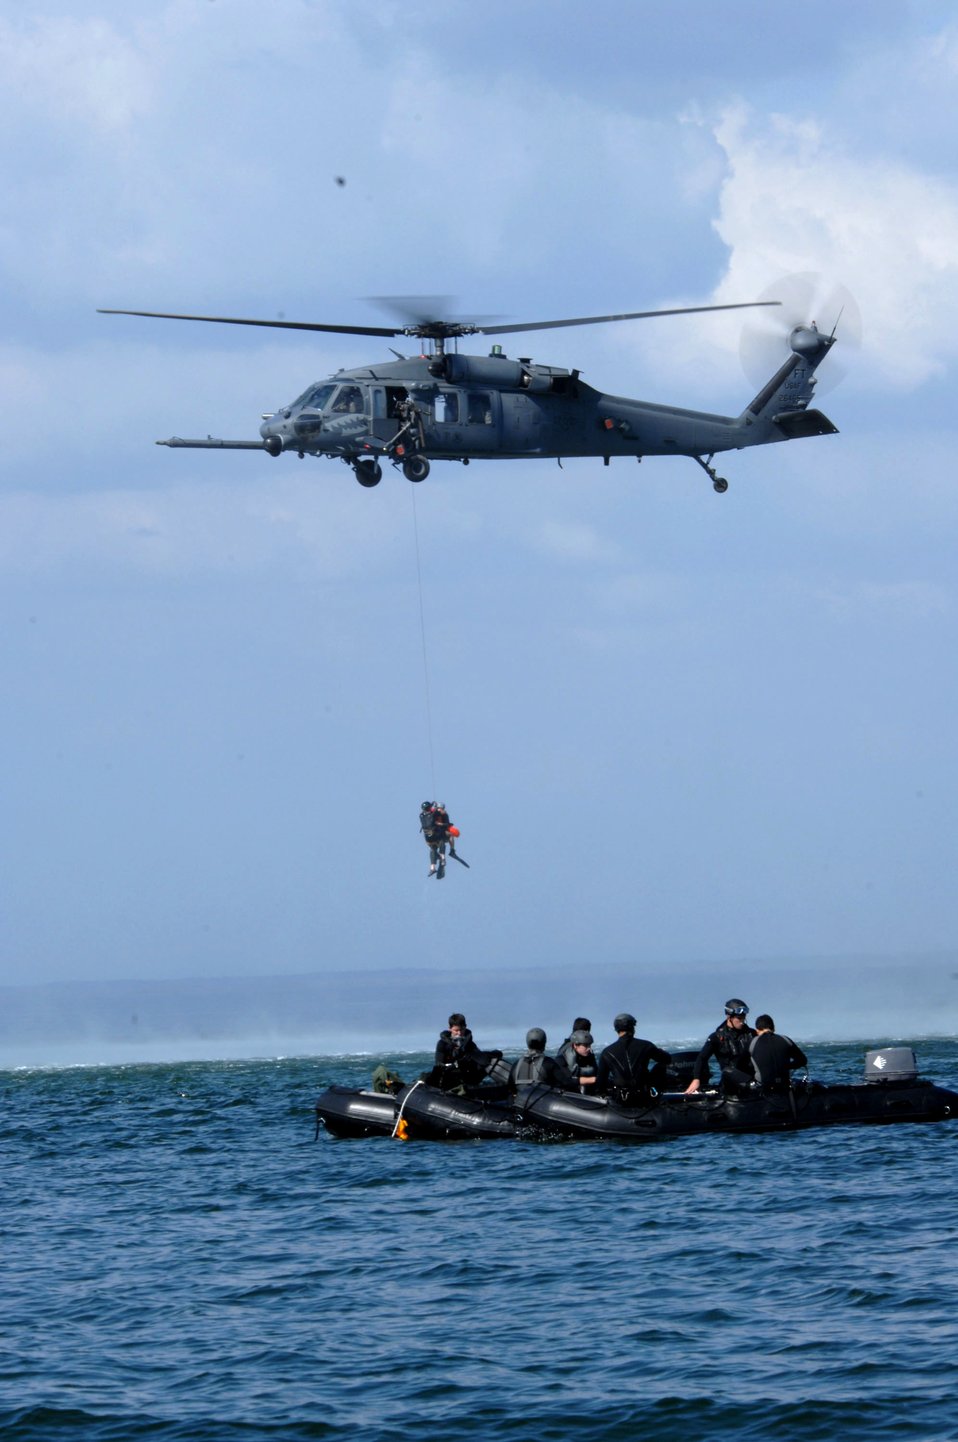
Pulled out of the Gulf

Pararescuemen from the 38th Rescue Squadron, Moody Air Force Base, Ga., are hoisted by a rescue crew into an HH-60 Pave Hawk from the 41st RQS, also out of Moody AFB, during a dive recovery exercise March 22 in the Gulf of Mexico.